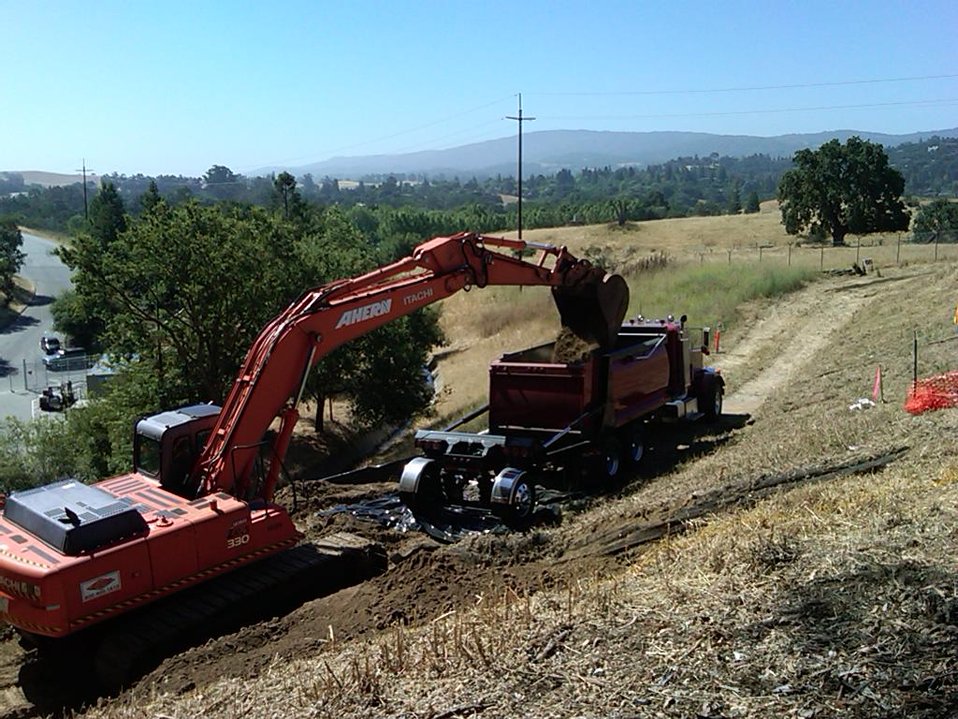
Recovery Act Supports Soil and Debris Cleanup, Groundwater Treatment at SLAC

Recovery Act workers are on track to remove more than 30,000 cubic yards of contaminated soil and debris at the SLAC National Accelerator Laboratory by September 2011.
The Recovery Act invested $14.3 million in legacy cleanup activities at SLAC. In addition to removing contaminated soil and debris that is shipped to local disposal facilities, Recovery Act workers installed three new groundwater treatment systems.